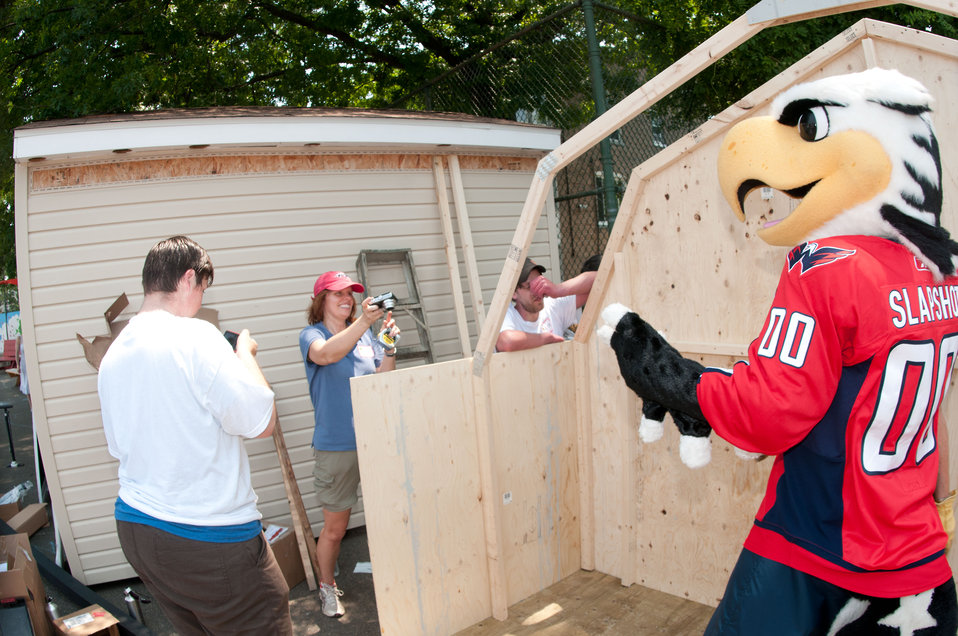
U.S. Department of Agriculture, Agricultural Marketing Service’s Ellen Anderson snapped a photo of Washington Capitals’ mascot Slapshot when he visited the construction team, for the new toolshed, for the People’s Garden, at William B. Powell Elementary School on Thursday, June 9, 2011 in Washington, DC.
Volunteers from U.S. Department of Agriculture People’s Garden Executive Master Gardener program and Washington Capitals hockey organization, along with defenseman Jeff Schultz, and mascot Slapshot transformed a grassy corner of the school playground into a habitat garden and outdoor learning area. Executive Master Gardeners led the volunteer project teams. The Washington Capitals donated new tools; tool shed; garden materials; lunch; most of the volunteers and more. The completed projects included a walking path; tiling of garden plots; planting a bird habitat garden, pollinator garden and native grasses; caterpillar and butterfly plaques; hummingbird and bat house, and tool shed. The garden will later include a picnic area, outdoor classroom, hummingbird garden, Monarch watch garden, native bee garden, and birdbath. USDA challenges its employees to establish People's Gardens at USDA facilities worldwide or on this case, help communities create gardens. People's Gardens vary in size and type, but all have a common purpose - to help the community and the environment.